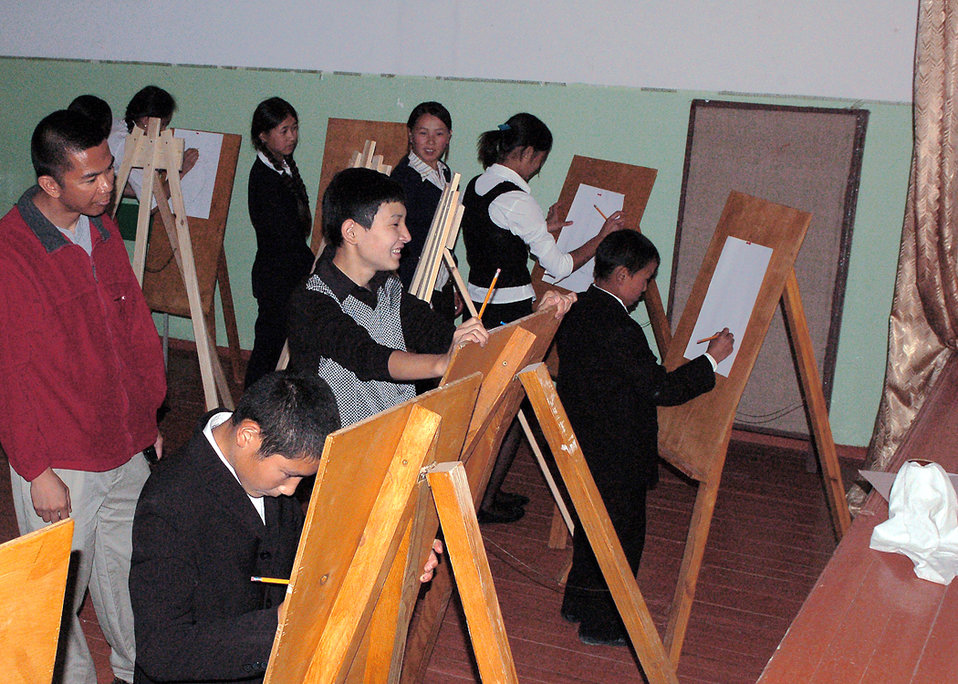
Stateside donations give Kyrgyz students tools of art trade

Students at Manas Village School in Kyrgyzstan draw pictures using easels donated by American friends and family members of the 376th Expeditionary Medical Group at Manas Air Base, Kyrgyzstan.